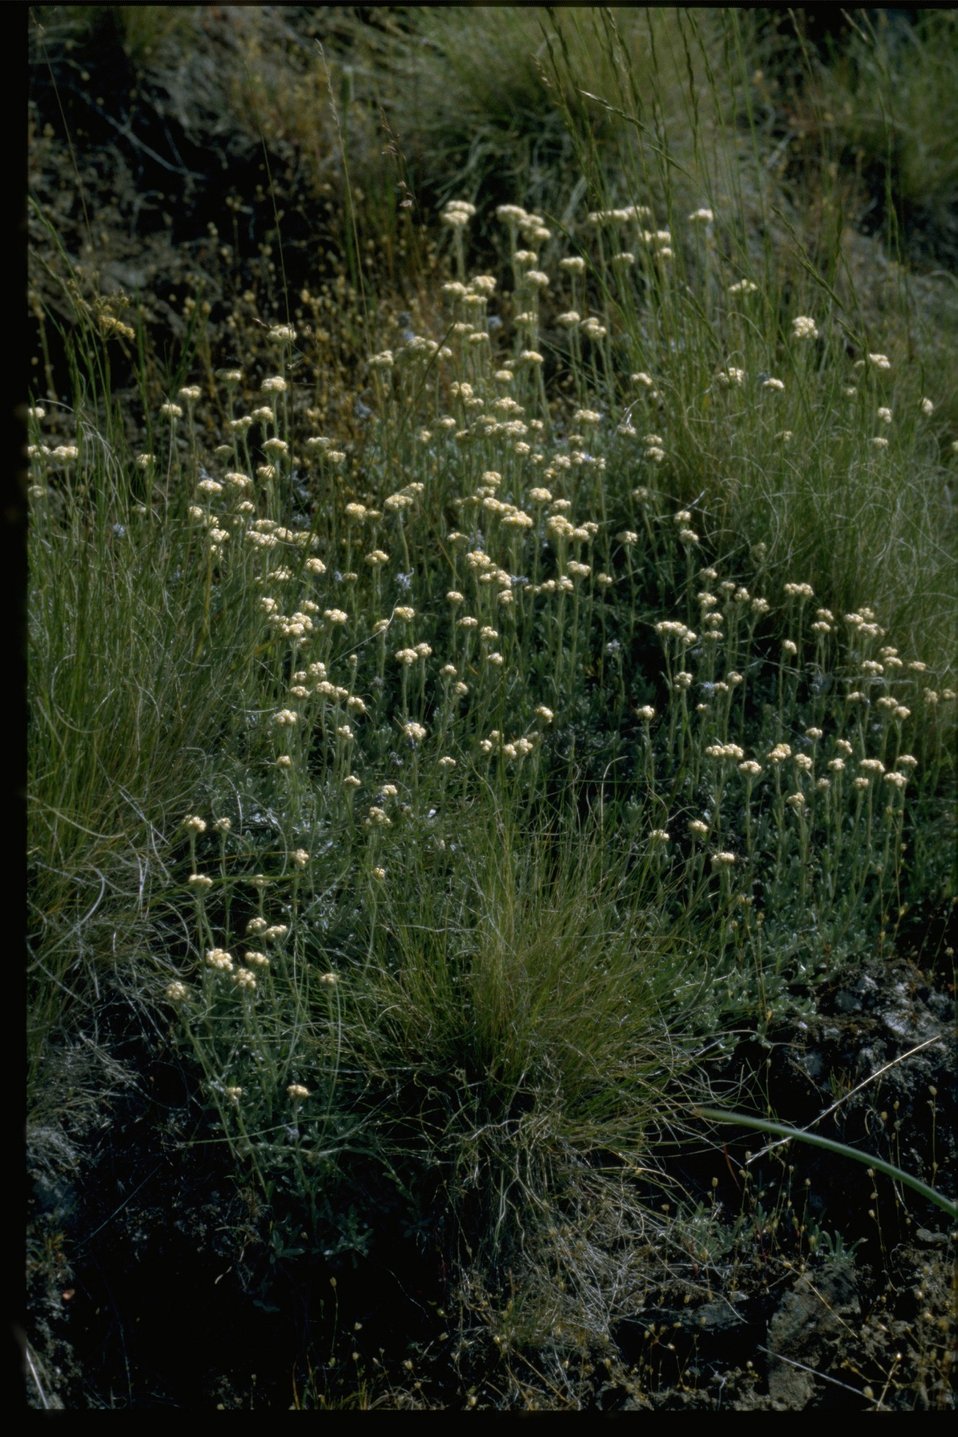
Farshot of littleleaf pussytoes (Antennaria microphylla).